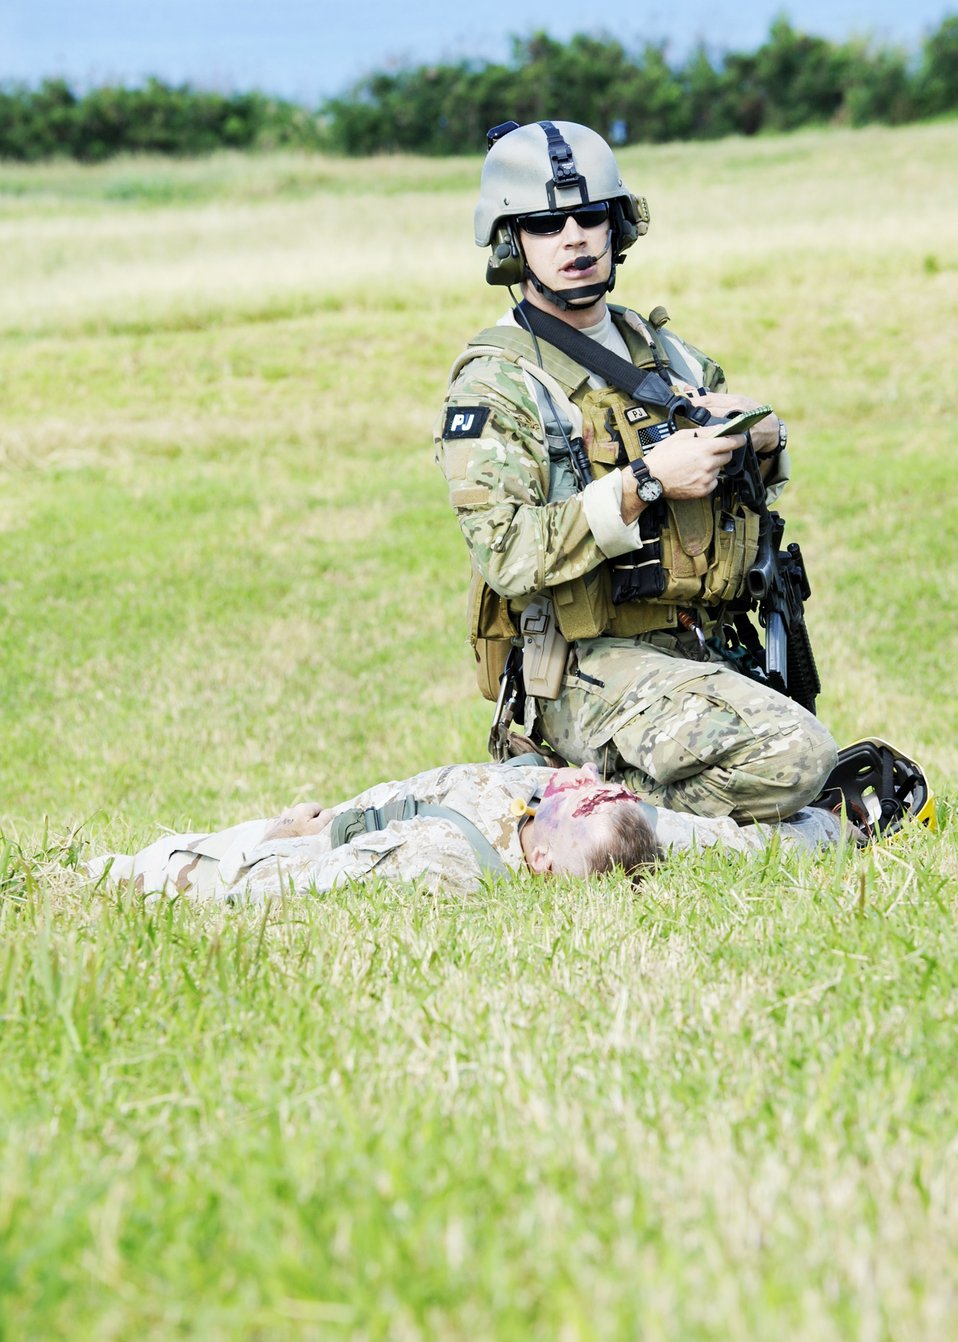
Kadena Airmen jump over le Shima Island

A pararescueman treats a